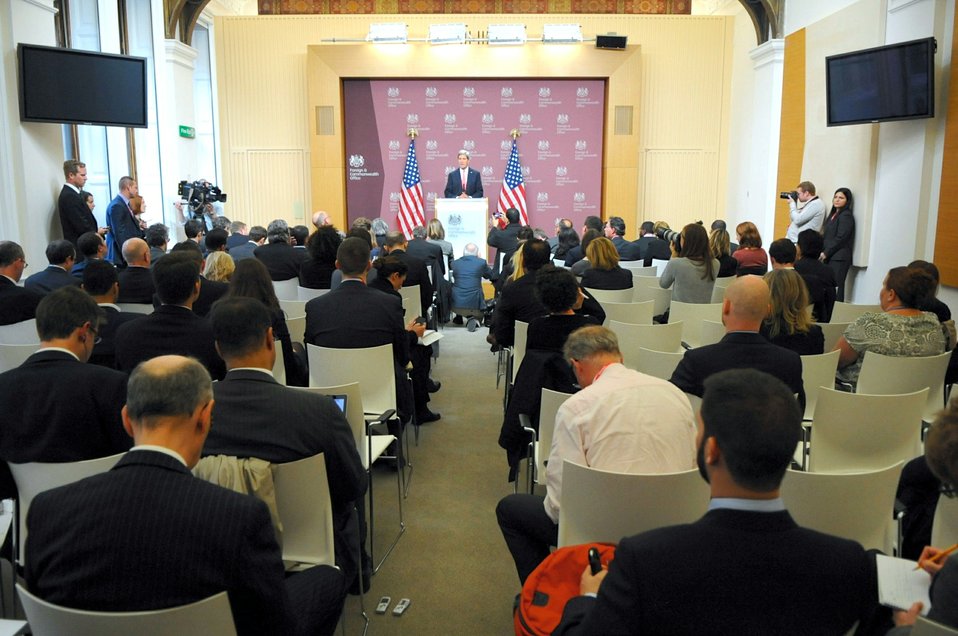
Secretary Kerry Addresses Reporters in London

U.S. Secretary of State John Kerry addresses reporters after the London 11 ministerial meeting on Syria in London, United Kingdom, on October 22, 2013.